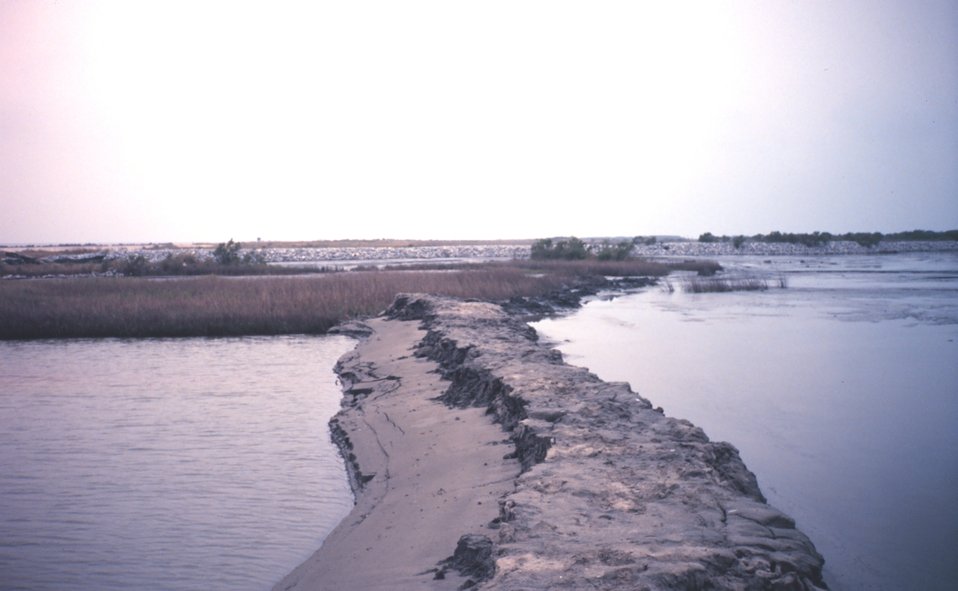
The Greenhill/East Timbalier dredged material inside of temporary levee to right -- dredged material dries to create new land.